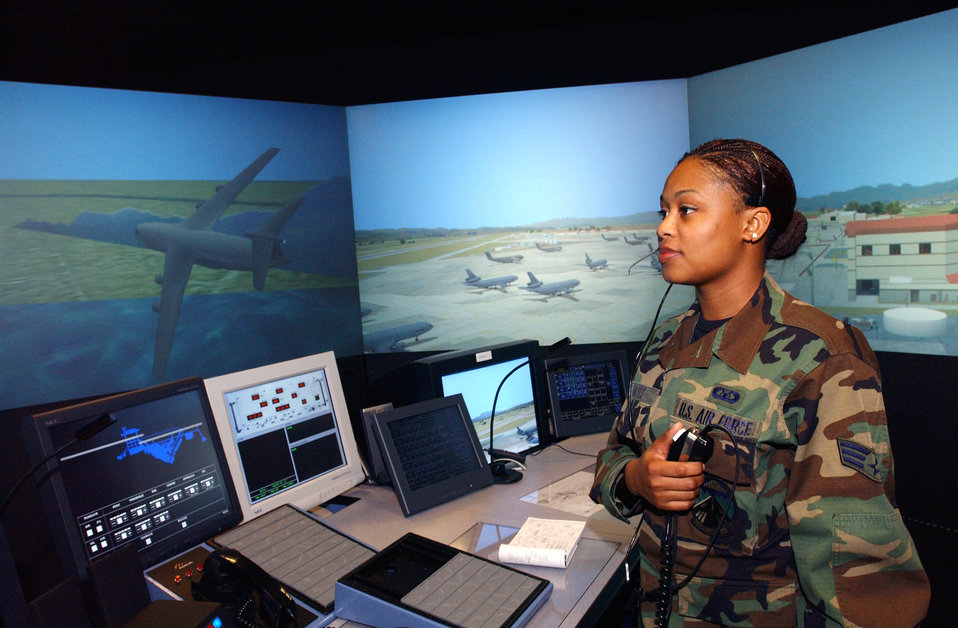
Total control

TRAVIS AIR FORCE BASE, Calif. -- Senior Airman Tiequanda Hayes, of the 60th Operations Support Squadron here, tests out the air traffic control simulator. The simulator allows